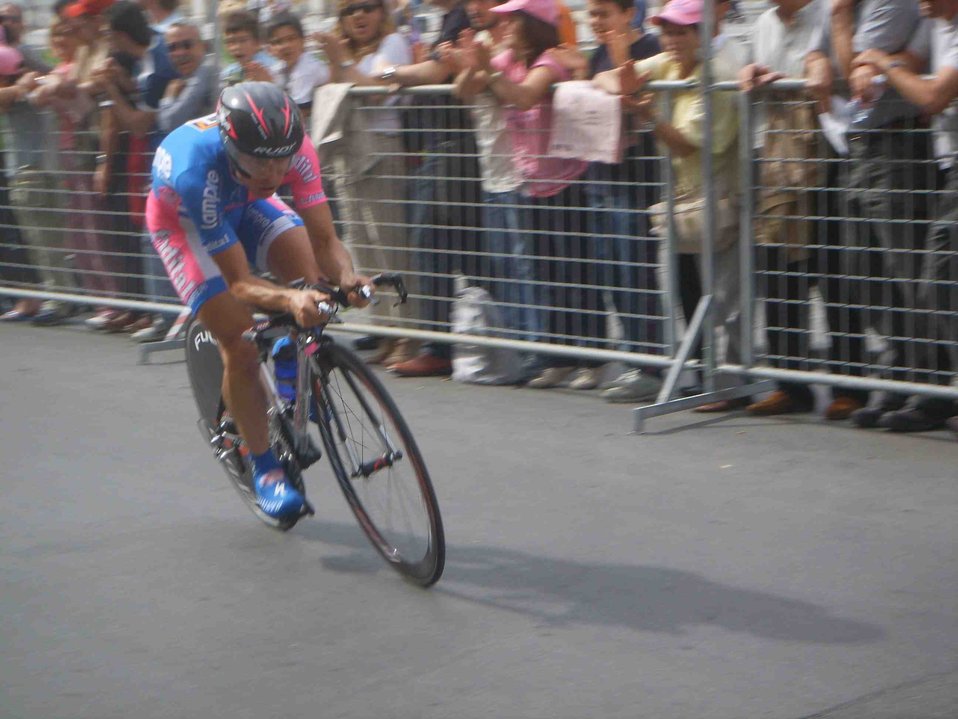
Italiano: Damiano Cunego in azione durante la crono di Pontedera al Giro 2006.